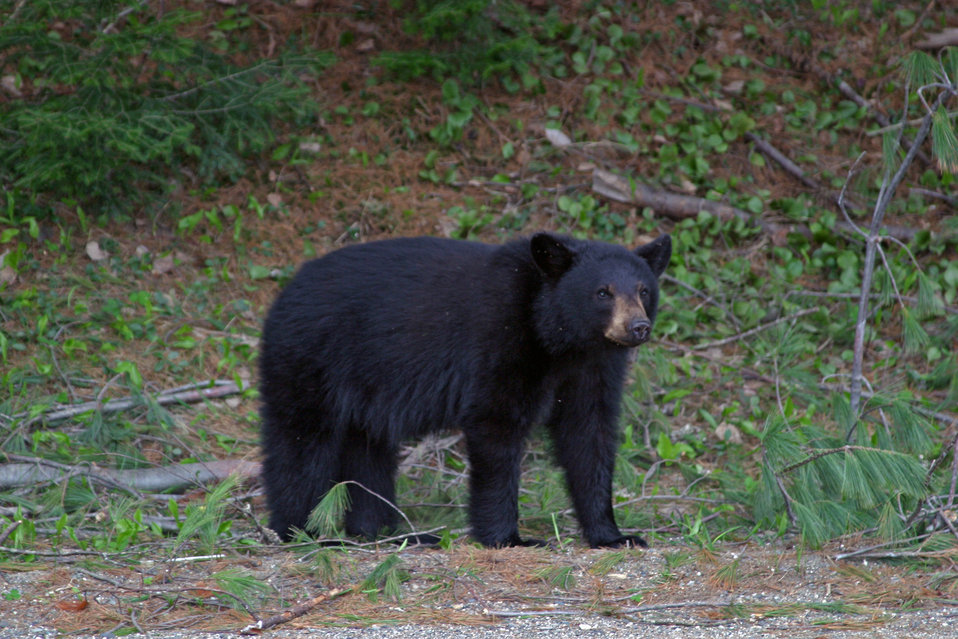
Black bear at Moosehorn National Wildlife Refuge.